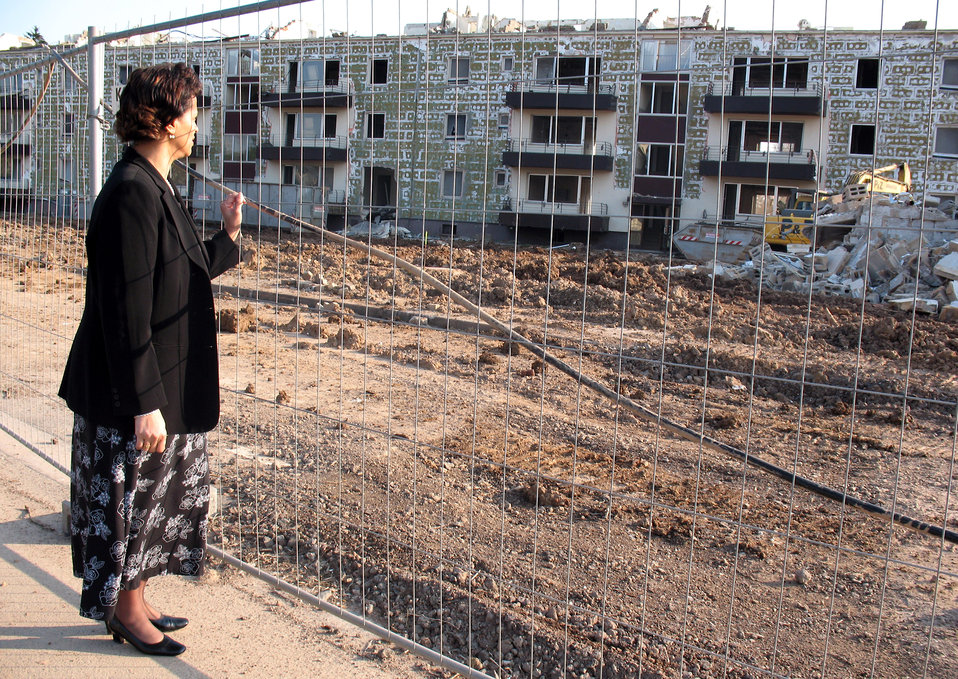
New housing on the way for Spangdahlem

Denise Hastye watches as the old stairwell housing gets demolished March 30 at Spangdahlem Air Base, Germany. The Air Force is spending $83 million to demolish the old stairwell housing and building 139 new homes. Ms. Hastye is the base Housing Flight director.